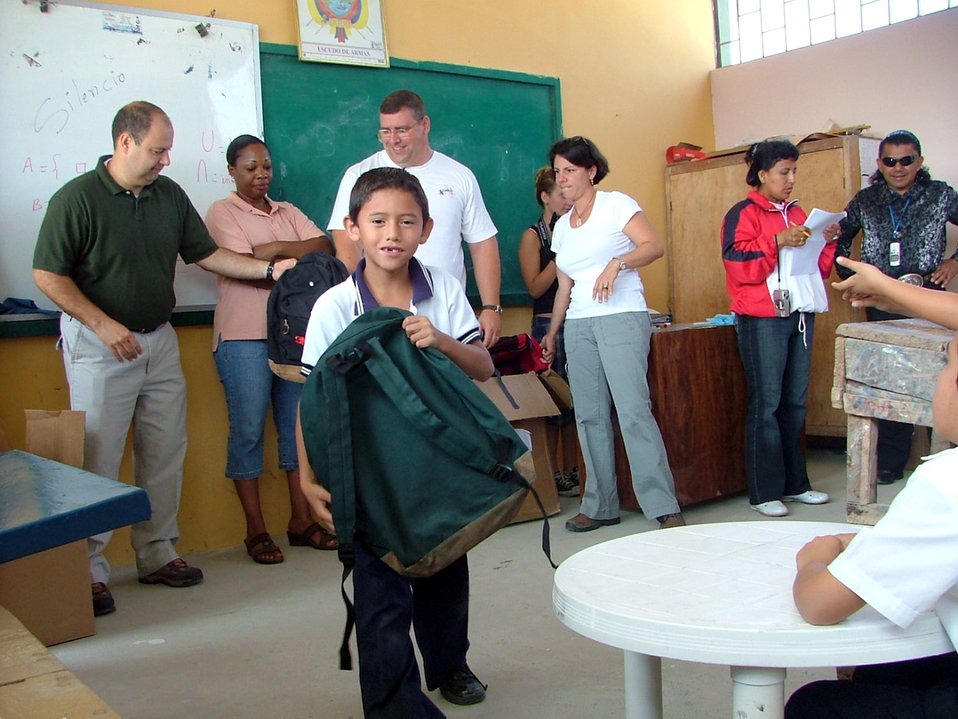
Airman support local community at Manta FOL

Airmen from Forward Operating Location Manta in Ecuador hand out backpacks Jul. 26 at Jose Peralta School as part of